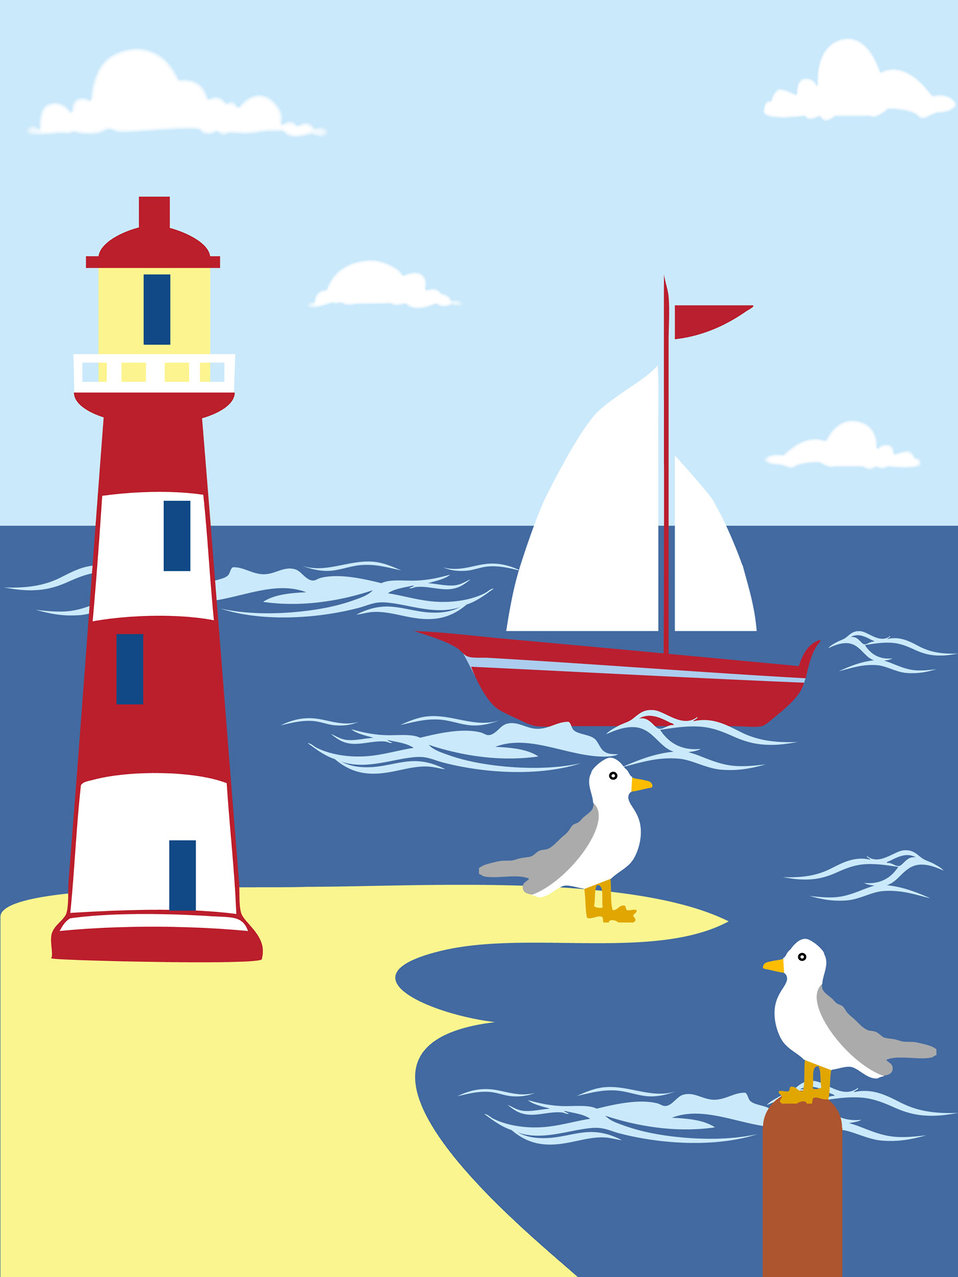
Lighthouse seaside scene

Lighthouse, yacht, ocean seaside beach illustration.